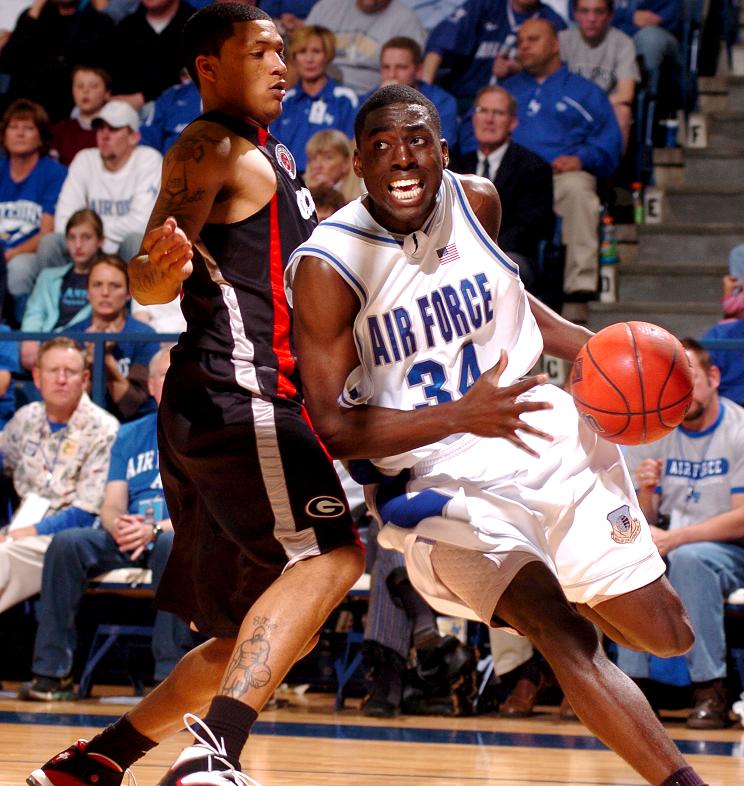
Falcon forwards march over Georgia in NIT

Air Force forward Dan Nwaelele breaks past Georgia guard Billy Humphrey for the basket March 19 at the Academy's Clune Arena. Nwaelele scored 19 points on the night. With the 83-52 win in the second round of the National Invitation Tournament, Air Force set a new record for wins in a season at 25.